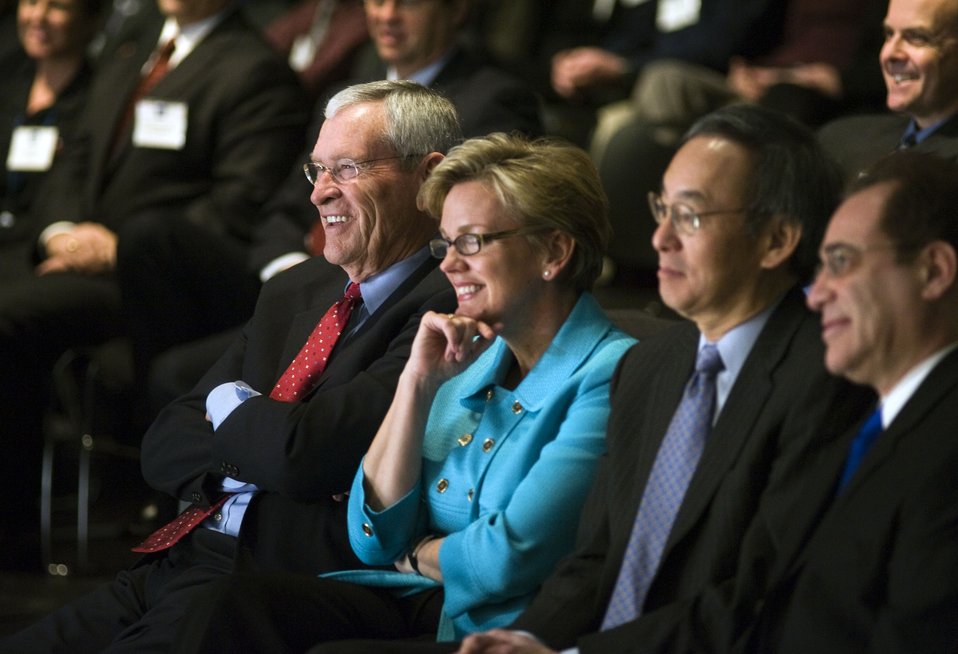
ChevyVoltFirstBattery04

General Motors Chairman and CEO Ed Whitacre (left to right), Michigan Governor Jennifer Granholm, U.S. Energy Secretary Steven Chu and Wayne County Executive Robert Ficano look on as the first Chevrolet Volt battery comes off the line at the GM Brownstown Battery plant in Brownstown Township, Michigan Thursday, January 7, 2010. The facility is the first lithium ion battery pack manufacturing plant in the U.S. operated by a major automaker.